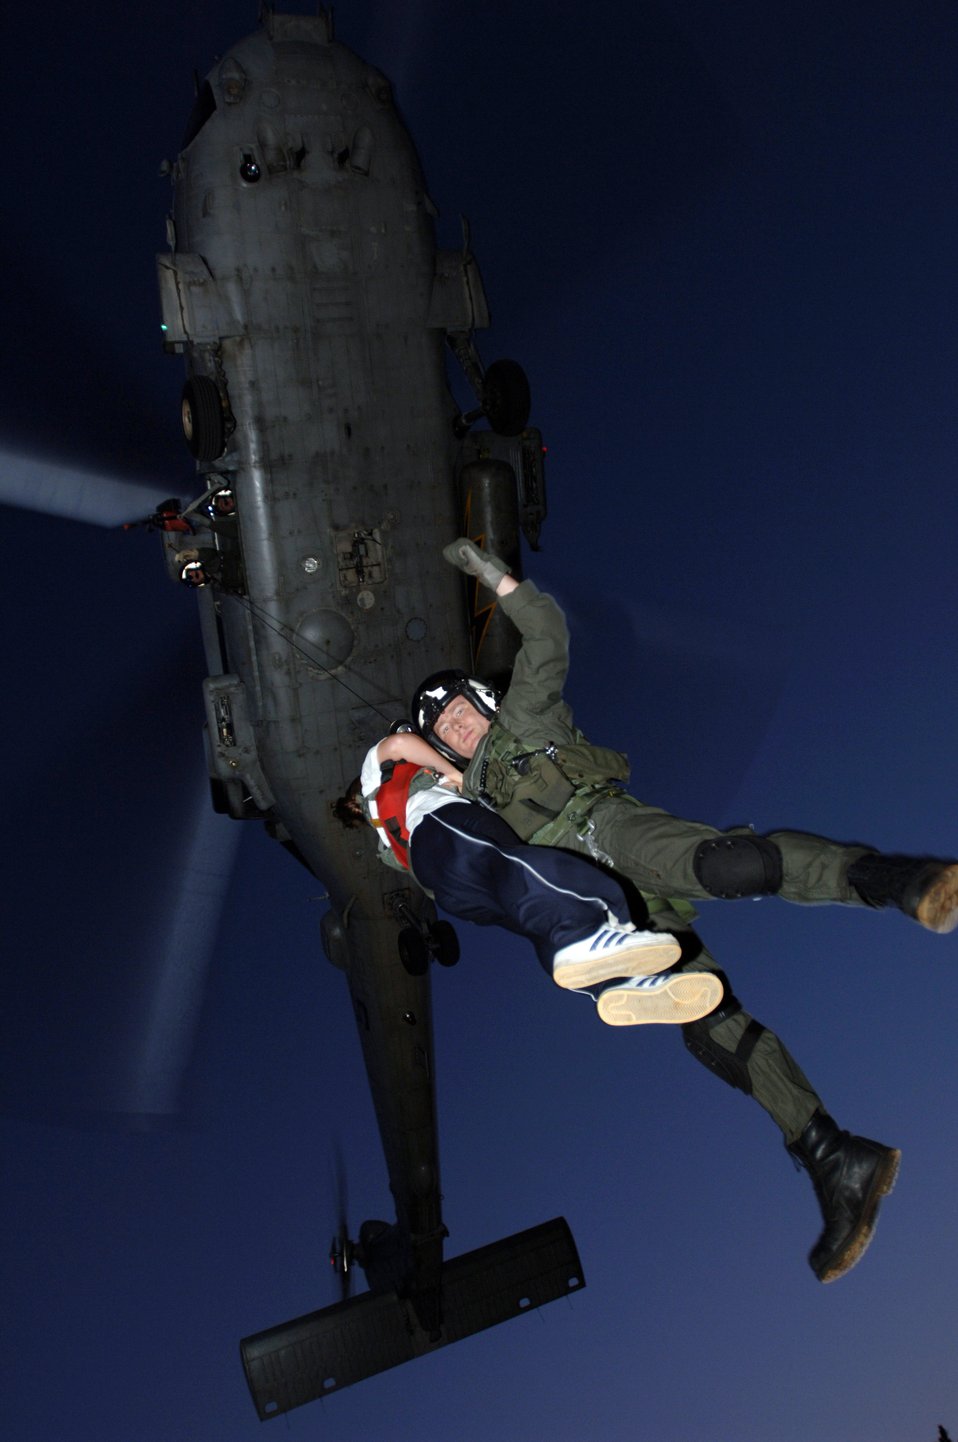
Airmen join Sailors, Marines for JASEX 05

KADENA AIR BASE, Japan -- Airman 1st Class Mandy Fessel is "rescued" by a pararescueman from a Navy HH-60G helicopter during Joint Air and Sea Exercise 2005 here. The exercise provides an opportunity for air and naval forces to work together in a maritime environment. Airman Fessel is assigned to the 18th Medical Support Squadron.